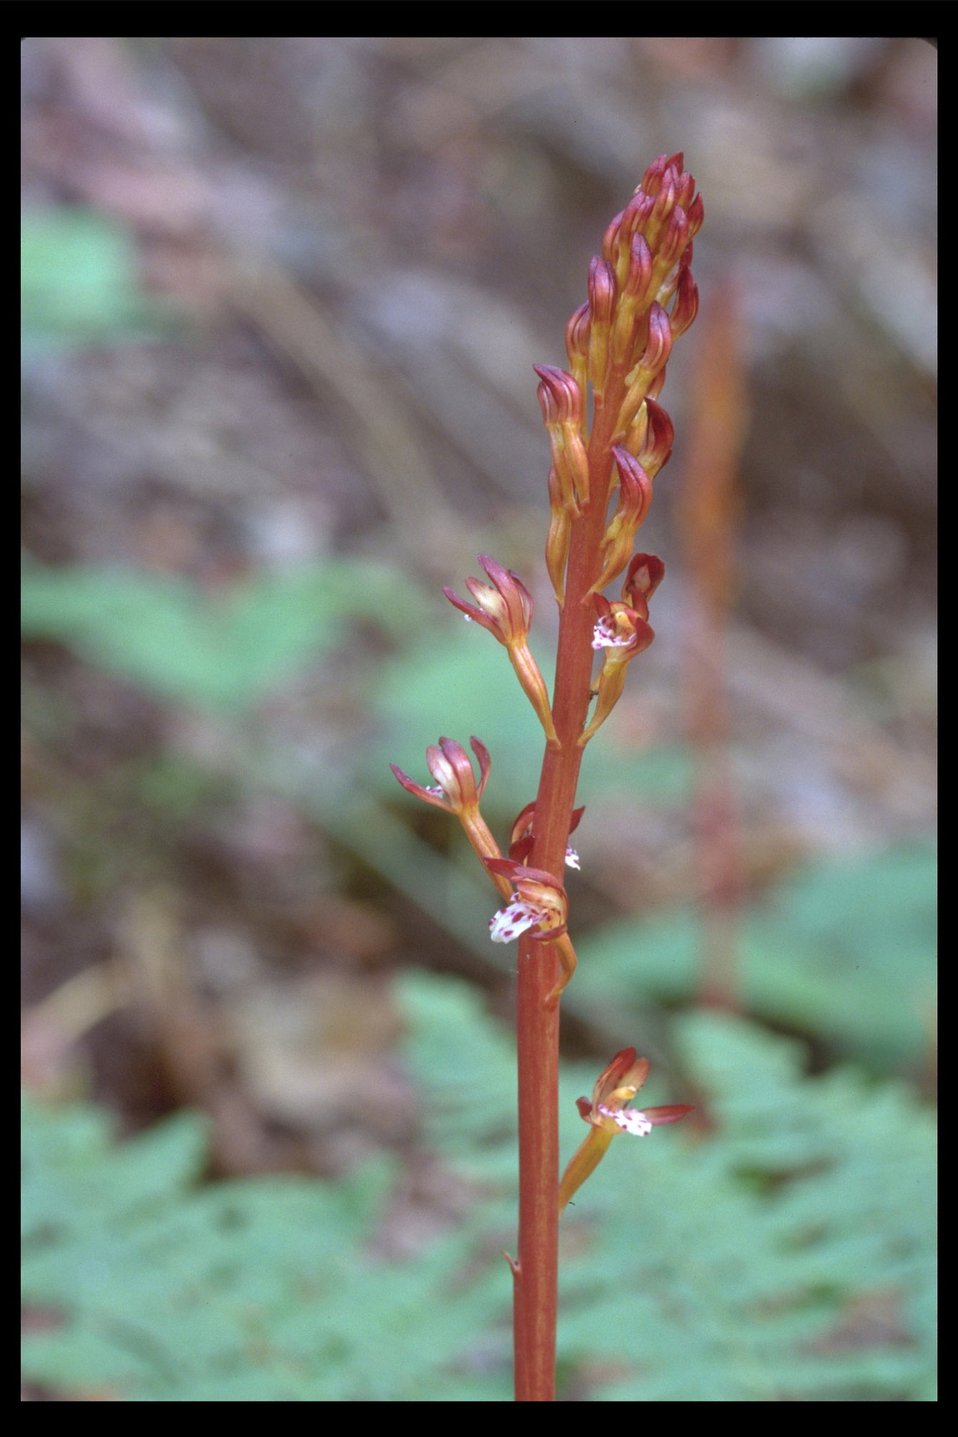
Spotted Coralroot (Corallorhiza maculata) at Upper Trail Creek.